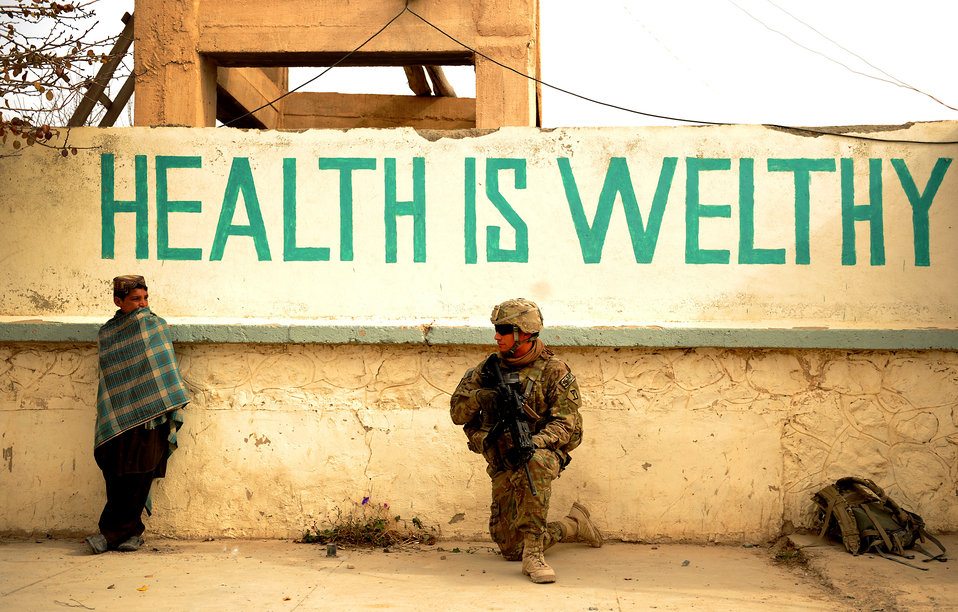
Talk it over

Senior Airman David Cummings talks to an Afghan boy outside of a hospital during a dismounted patrol Nov. 21, 2011, in Shah Joy, Afghanistan. Members of Provincial Reconstruction Team Zabul went to the hospital to conduct a key leader engagement. Cummings is a PRT Zabul medic.